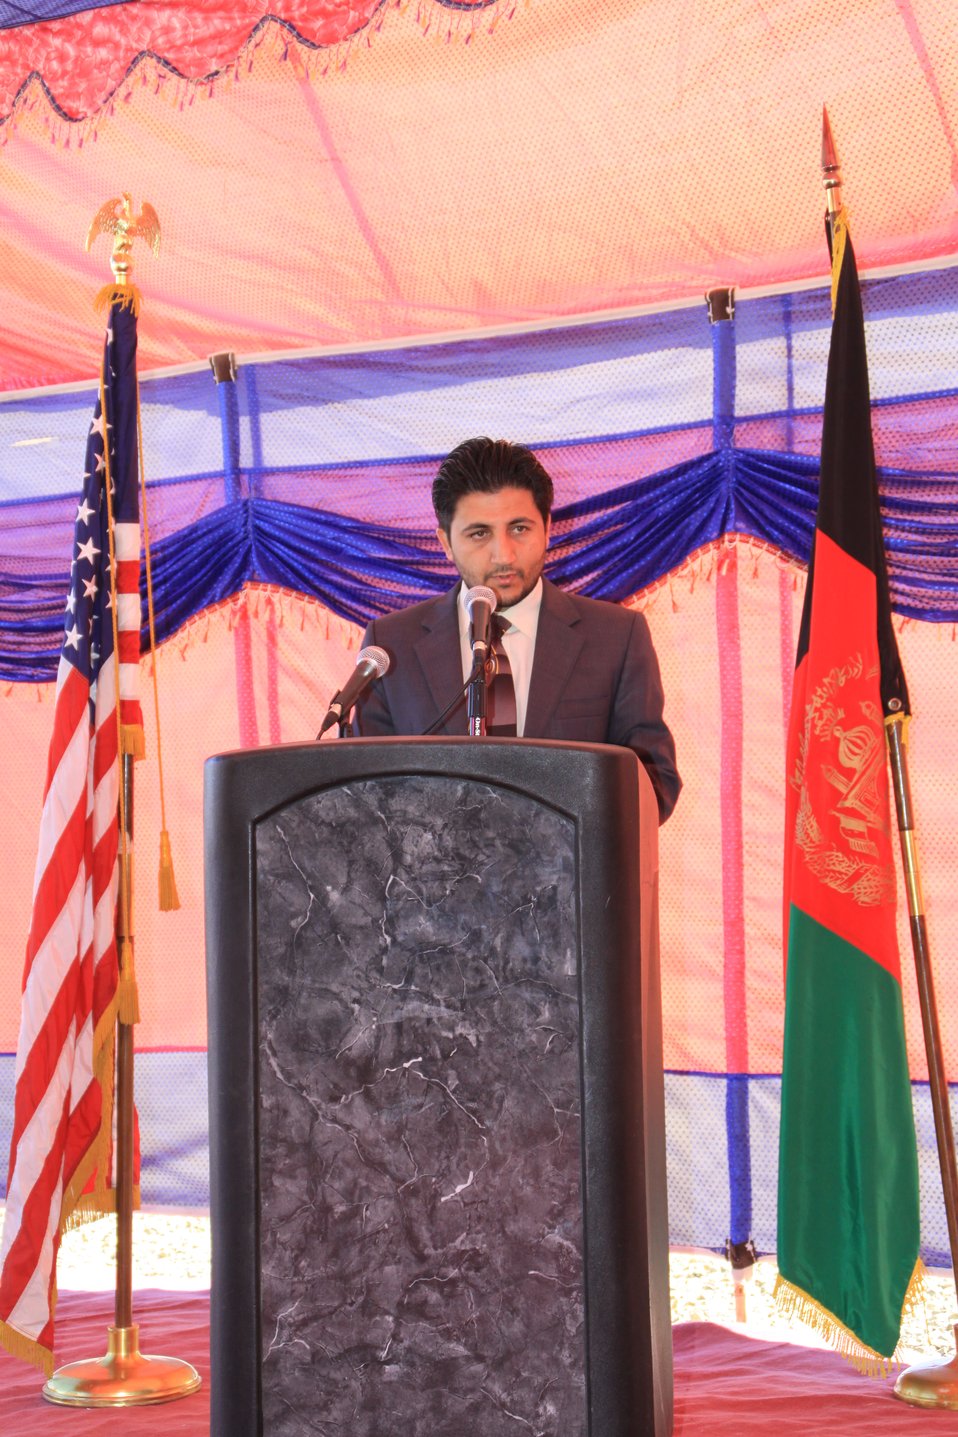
AVIPA Plus Wheat Seed Distribution 101005